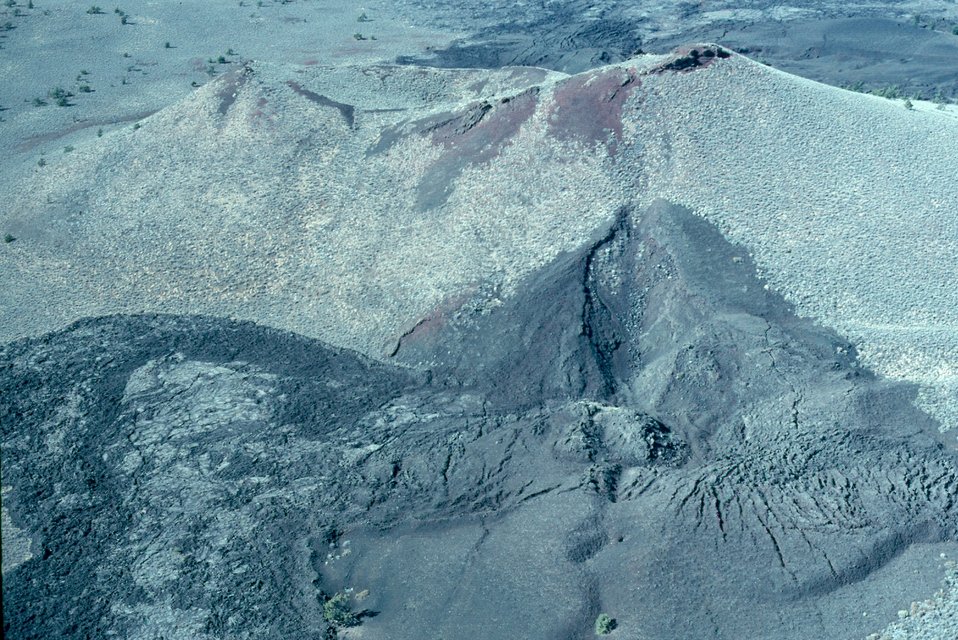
Breached cinder cone in Great Rift Shoshone Field Office USRD Upper Snake River District